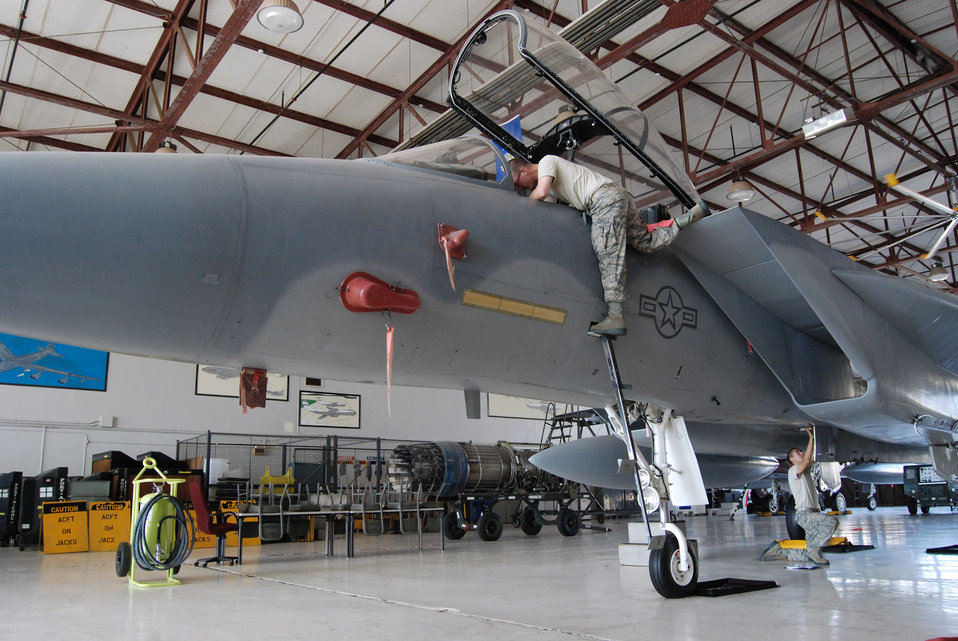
Newer F-15s

Students in the F-15 Eagle aircraft maintenance course perform a Safe for Maintenance procedure on an F-15B July 23, 2010, at Sheppard Air Force Base, Texas. Students received hands-on F-15 maintenance training on F-15A and F-15B models and were briefed on the differences between their aircraft and the ones on operational flightlines, the F-15C and F-15D.